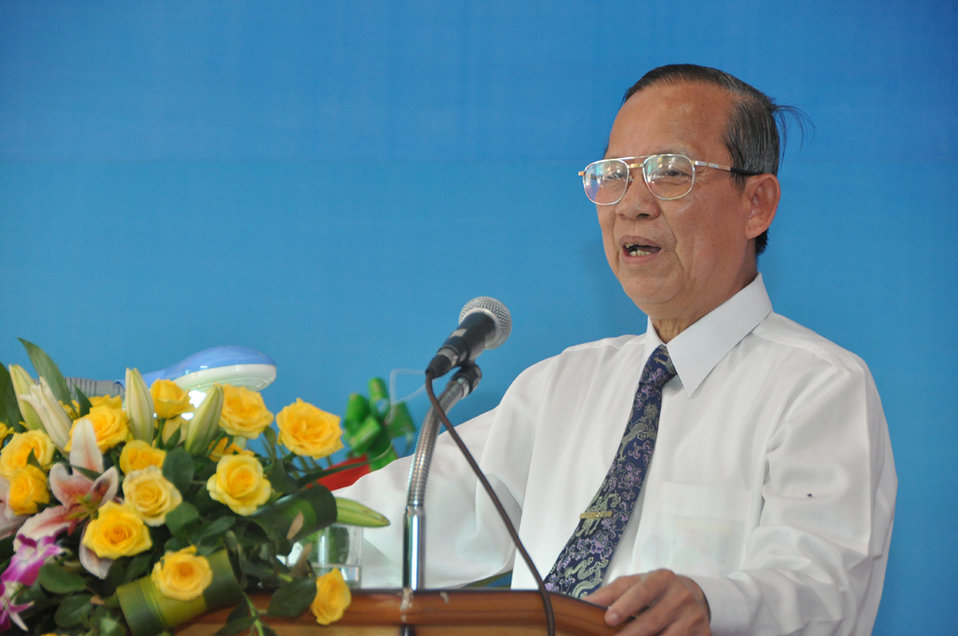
Co-pay Methadone Treatment Center Opens in Hai Phong on June 18, 2011

Deputy Prime Minister Truong Vinh Trong.